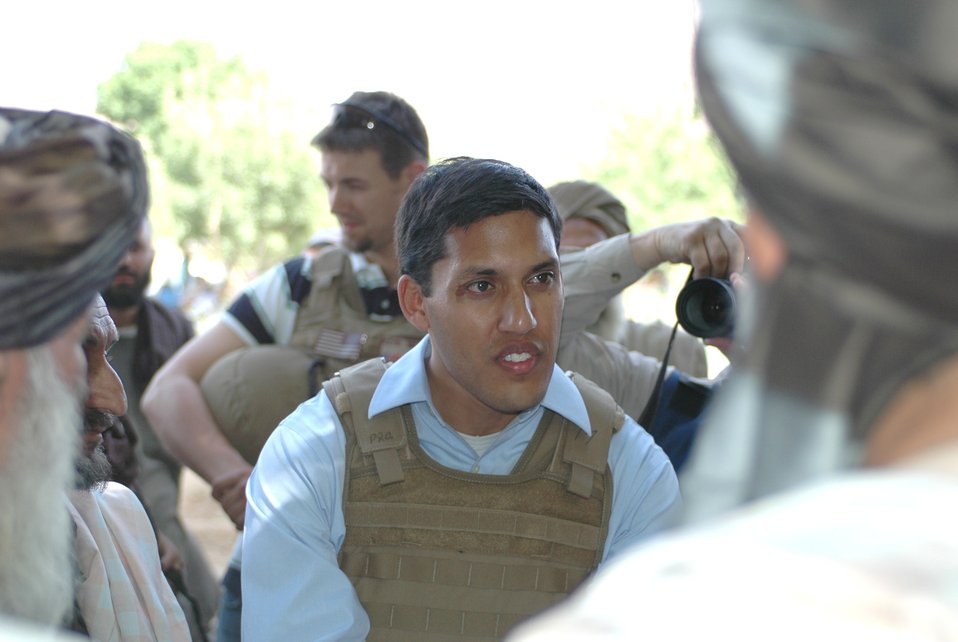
Dr Shah Visits Argandab April 10, 2010